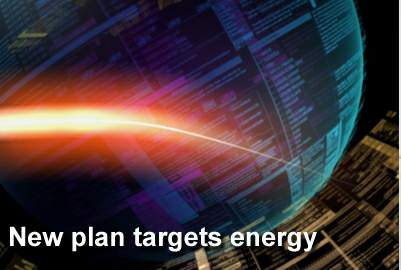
New Air Force plan targets energy

Air Force officials released its new energy plan Dec. 9 to serve as the framework for communicating Air Force energy goals and further expands a culture shift